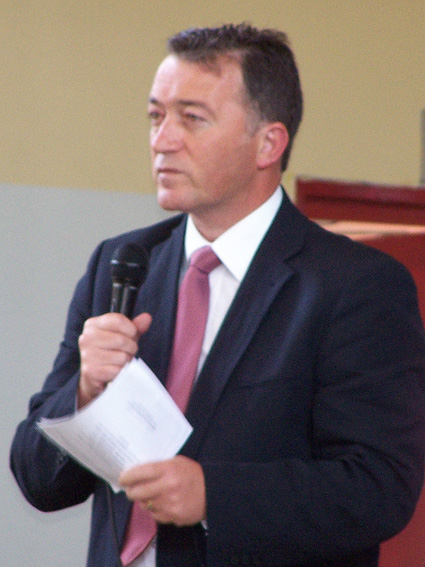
Afrikaans: Cameron Dugmore, Wes-Kaapse onderwysminister, het St. Helenabaai aan die Weskus, vroeg in 2007 besoek toe daar 'n krisis in die plaaslike onderwys was. Bruin ouers het geweier om hulle kinders na voormalige Model C-skole te stuur omdat hulle die skole van rassisme beskuldig het. Hier spreek Dugmore die ouers in die gemeenskapsaal in Laingville, 'n township van St. Helenabaai, toe in om die beurt Afrikaans, Xhosa en Engels. Cameron Dugmore, education minister of the Western Cape, South Africa, speaking to an audience in 2007.